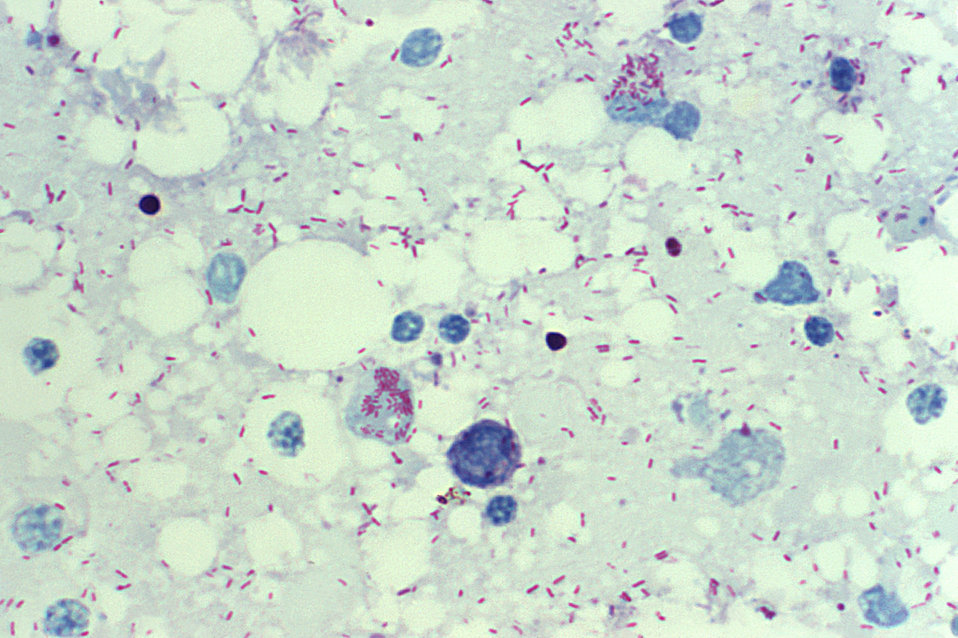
This photomicrograph of a Gimenez-stained yolk sac smear revealed the presence of Rickettsia rickettsii bacteria, which are the cause of Rocky Mountain spotted fever (RMSF). These bacteria range in size from 0.2 x 0.5 micrometers to 0.3 x 2.0 micrometers. They are difficult to see in tissues by using routine histologic stains, and generally require the use of special staining methods, such as the Gimenez stain used in this case.